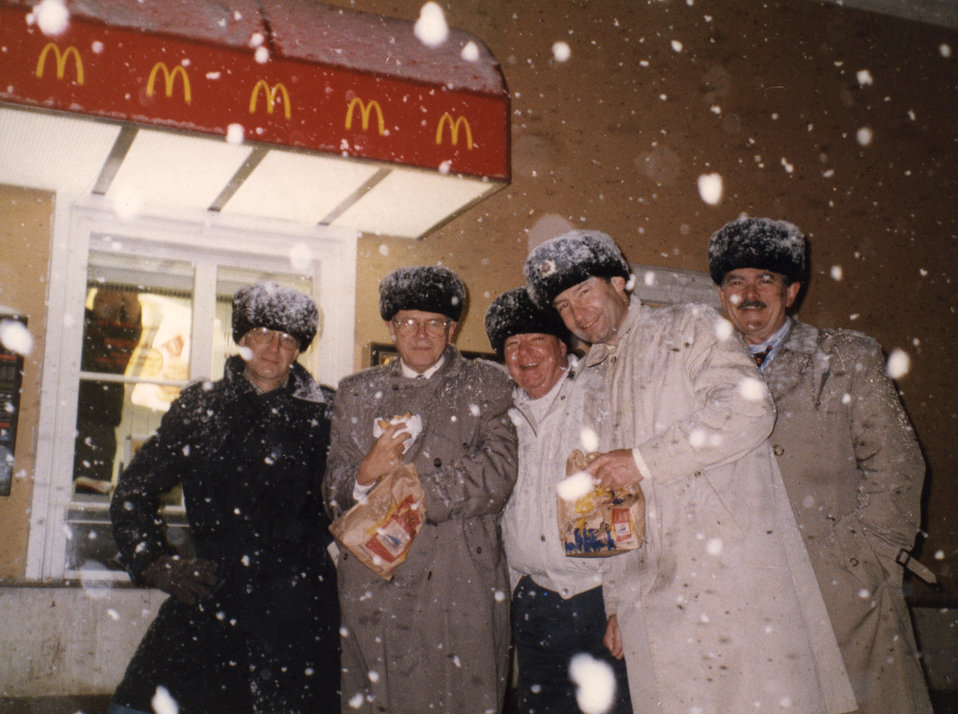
Here attendants at the CDC-Ministry of Health sponsored STD Workshop are taking a break in Moscow, 1998.